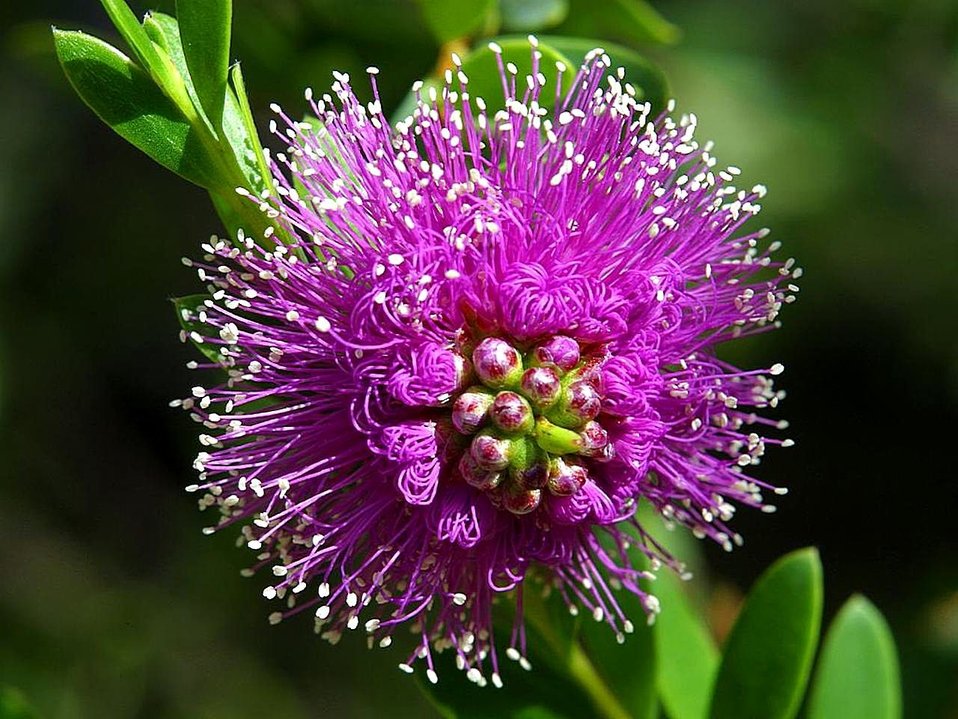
English:
Image title: Beautiful purple flower Image from Public domain images website, http://www.public-domain-image.com/full-image/flora-plants-public-domain-images-pictures/flowers-public-domain-images-pictures/beautiful-purple-flower.jpg.html